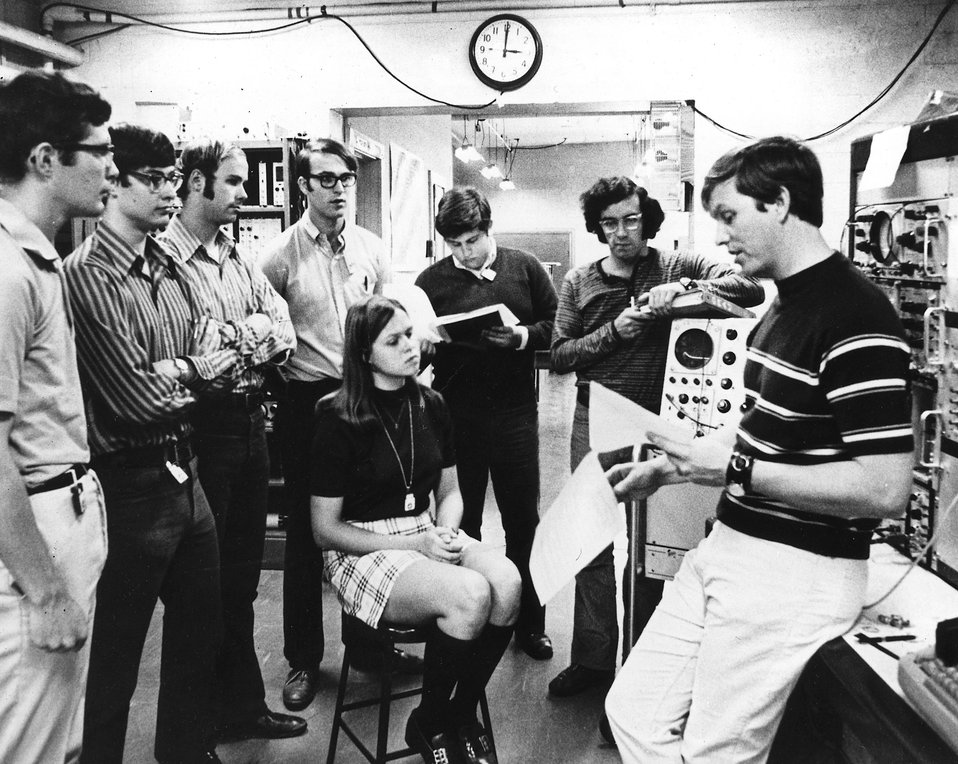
Cooperative educational programs are conducted in several ways at the Atomic Energy Commission's laboratories. c. 1972